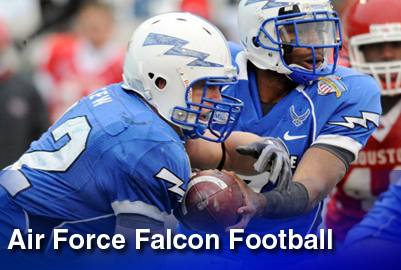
Academy Football